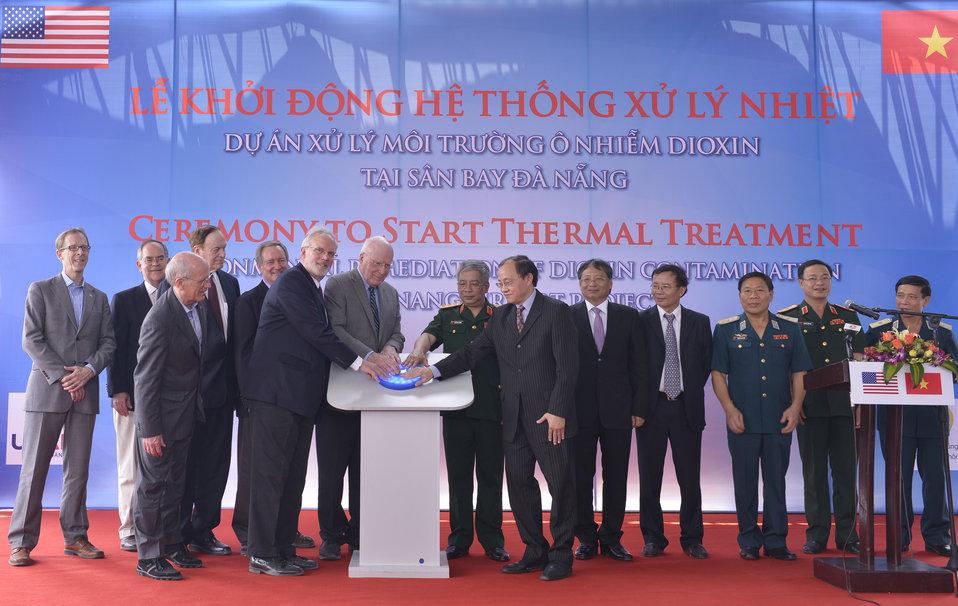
Senator Leahy, Senior Lieutenant General Nguyen Chi Vinh, Vietnam’s Vice Minister of National Defense, U.S. Ambassador David Shear and Vice Chairman of Vietnam’s National Assembly’s Foreign Relations Committee Ha Thuy Thong switched on the thermal t

Danang, April 19, 2014.